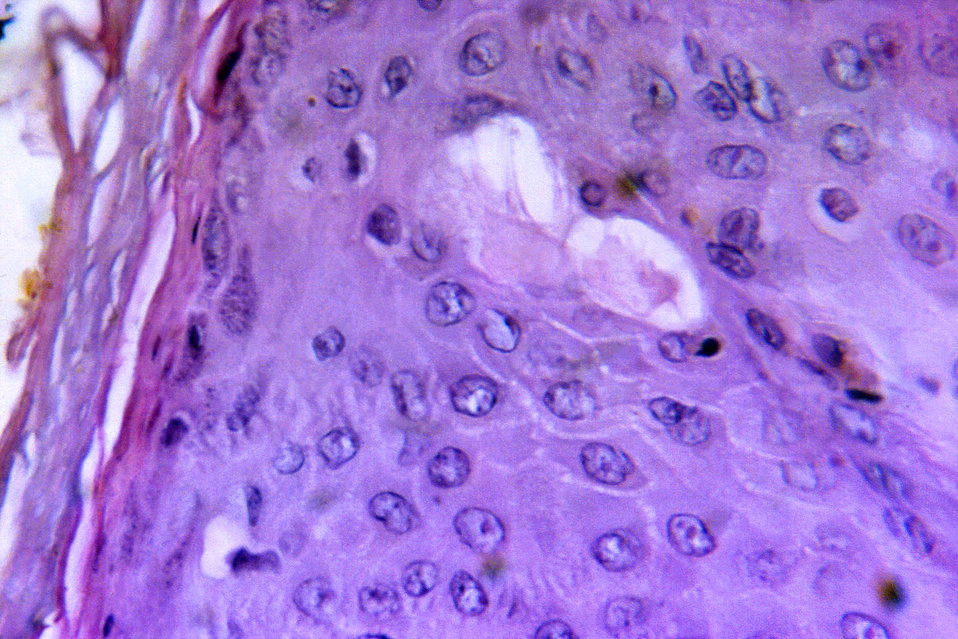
Magnified 730X, this photomicrograph depicts some of the cytoarchitectural pathologic changes found in a sample of skin tissue from a eczema vaccinatum lesion, which had manifested itself after this patient had received a smallpox vaccination.